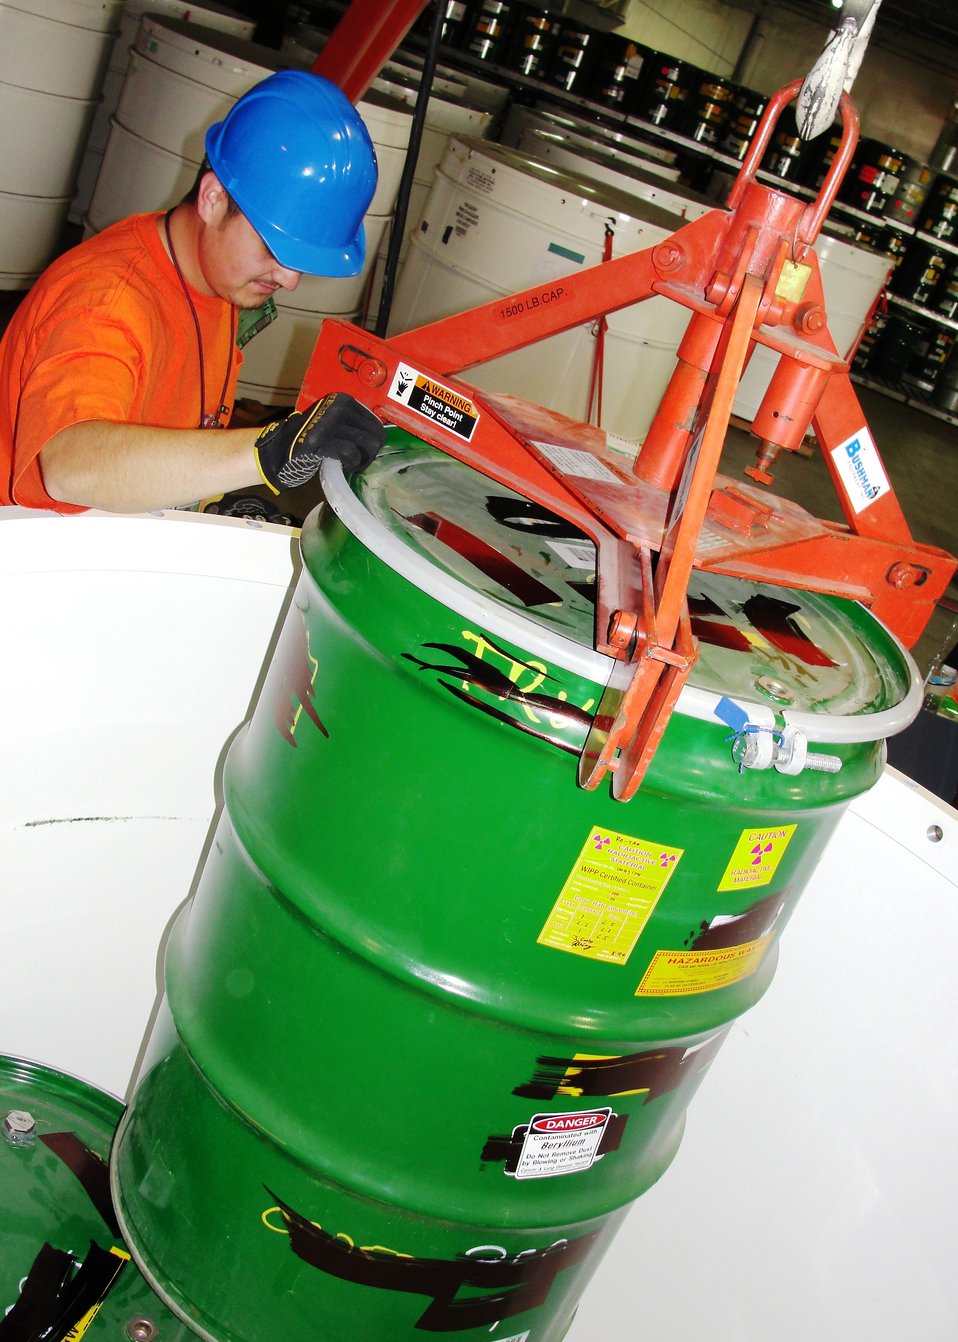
TRU drum 8-20-10